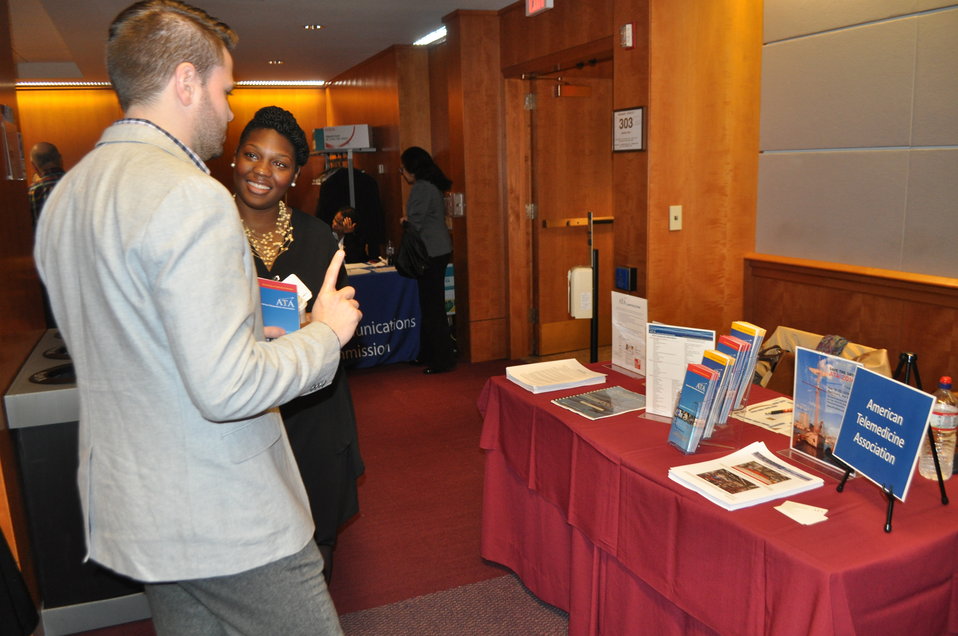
12.6.13 mHealth Innovation Expo

FCC mHealth Innovation Expo.